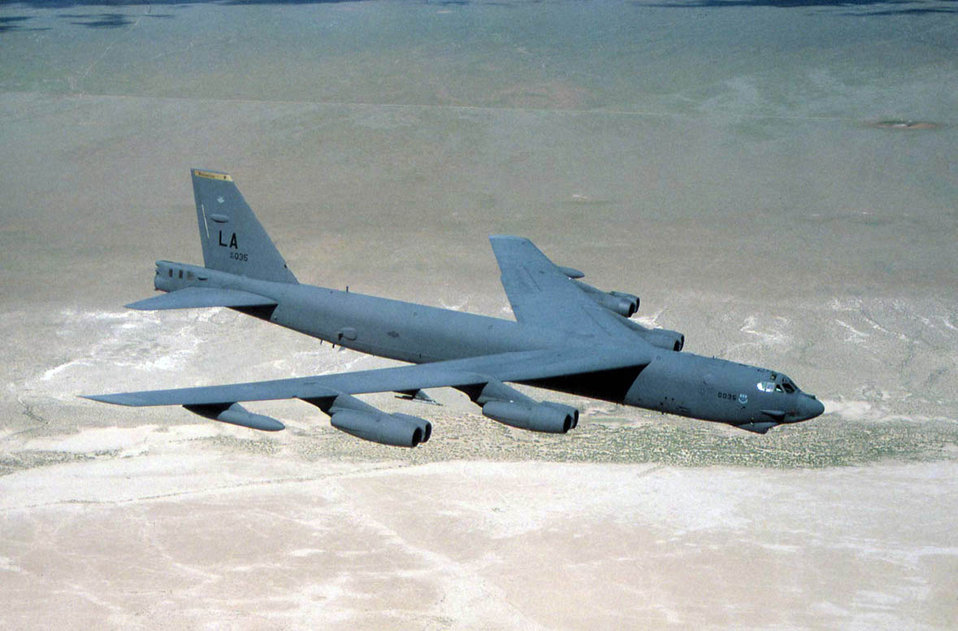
B-52

FILE PHOTO --In a conventional conflict, the B-52 Stratofortress can perform air interdiction, offensive counter-air and maritime operations. During Desert Storm, B-52s delivered 40 percent of all the weapons dropped by coalition forces. It is highly effective when used for ocean surveillance, and can assist the U.S. Navy in anti-ship and mine-laying operations. Two B-52s, in two hours, can monitor 140,000 square miles of ocean surface. All B-52s are equipped with an electro-optical viewing system that uses platinum silicide forward-looking infrared and high resolution low-light-level television sensors to augment the targeting, battle assessment, flight safety and terrain-avoidance system, thus further improving its combat ability and low-level flight capability.